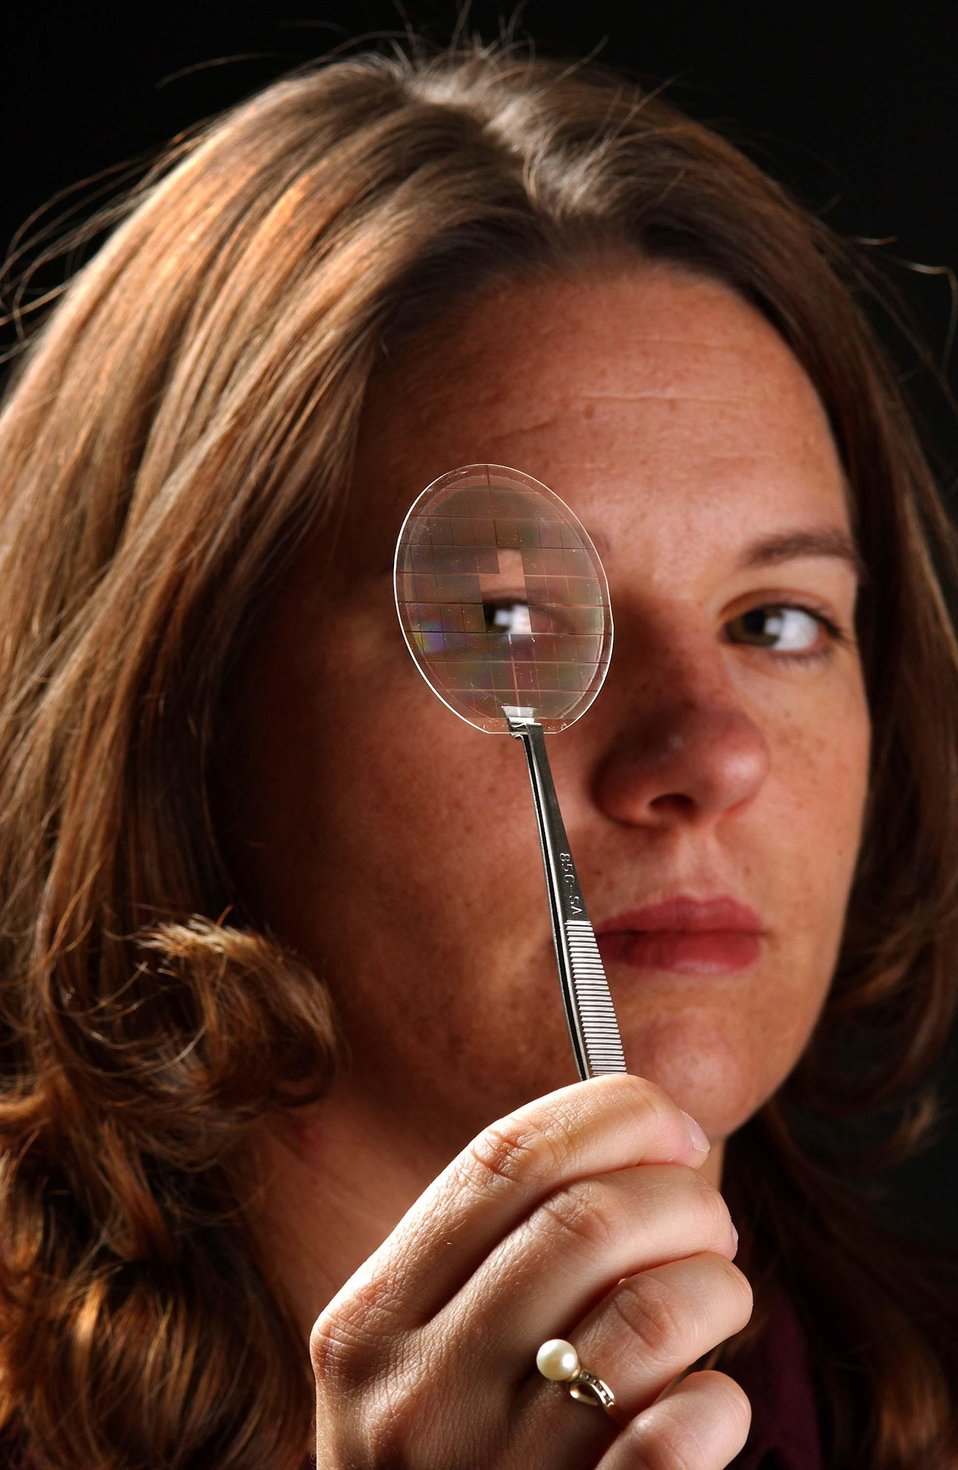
CO-INVENTOR CHRISTINE MITCHELL LOOKS THROUGH A SUBSTRATE THAT WAS MADE FOR THE CANTILEVER EPITAXY GROWTH PROCESS.

A SANDIA RESEARCH TEAM WON AN R&D 100 AWARD, 2004, FOR THE DEVELOPMENT OF THE CANTILEVER EPITAXY PROCESS WHICH OFFERS THE POTENTIAL FOR LONGER LIVED AND BETTER PERFORMING LIGHT EMITTING DIODES (LEDS) TO HELP IN THE DEVELOPMENT OF SOLID STATE SOURCES FOR HIGH EFFICIENCY WHITE LIGHTING.